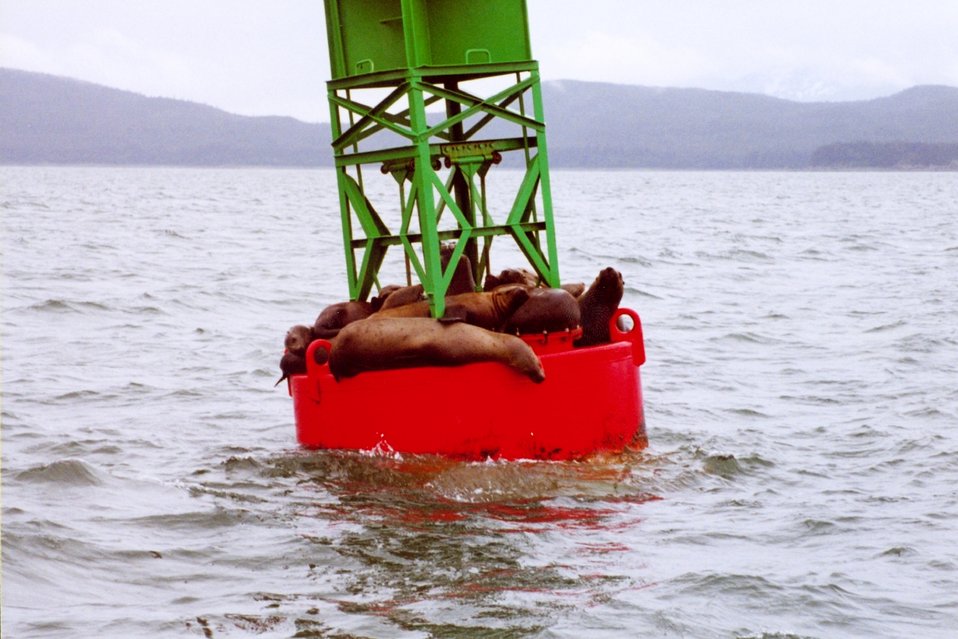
Sea lions find a resting place on a buoy in the labyrinth of Southeast Alaska waterways.